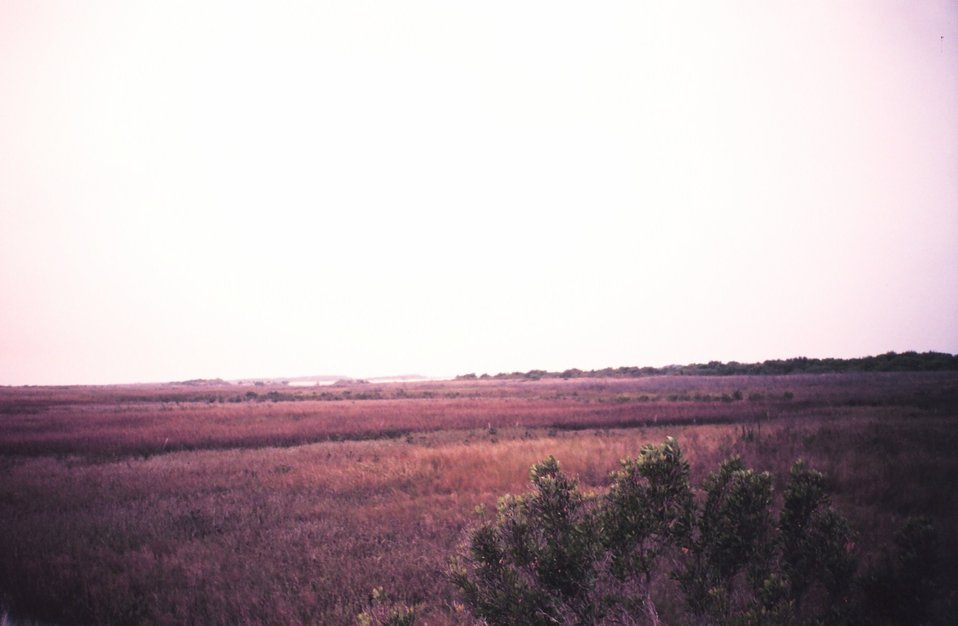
Natural marsh area primarily Spartina. Critical habitat for shrimp, crabs, and many game and commercial fish species.